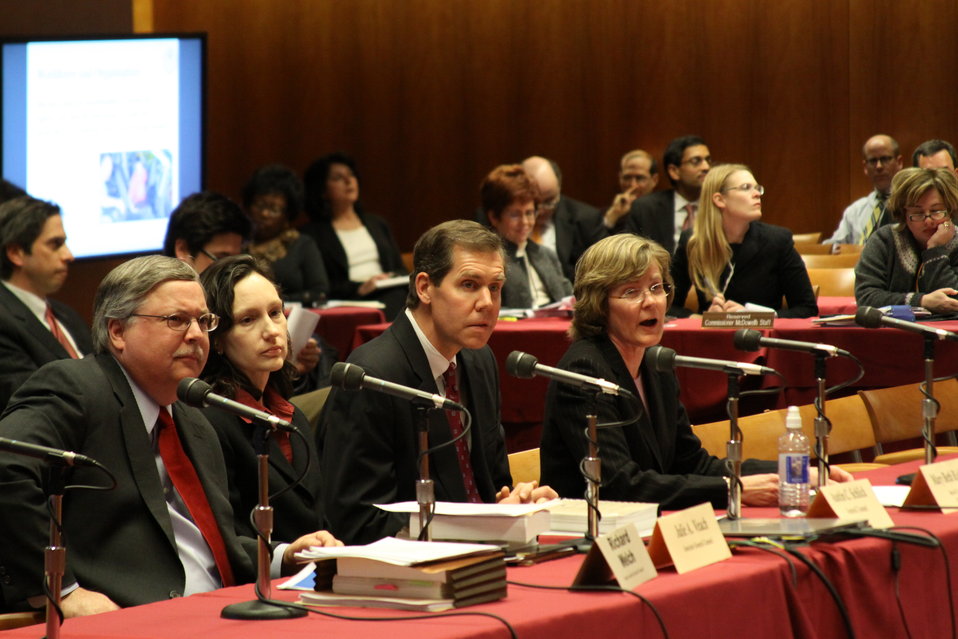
Open Commission Meeting - 2/18/2010

The Federal Communications Commission will hold an Open Meeting in Washington, DC. on February 18, 2010, which will include the following items:

E-Rate: An Order and Notice of Proposed Rulemaking to enable schools that receive funding from the E-Rate program to allow members of the general public to use the schools' Internet access during non-operating hours at no additional cost to the Universal Service Fund. This order and notice do not permit or require any changes to E-Rate applications due on February 11, 2010; Ex Parte Reform: A Notice of Proposed Rulemaking to improve the transparency and effectiveness of the FCC's decision-making process by reforming the ex parte rules; Procedural Reform: A Notice of Proposed Rulemaking to enhance the efficiency, openness, and transparency of the Commission's proceedings by improving and modernizing certain organizational and procedural rules; National Broadband Plan Status Report: Commission staff will report on the status of the National Broadband Plan, providing a framework for the national purposes portion of the Plan.